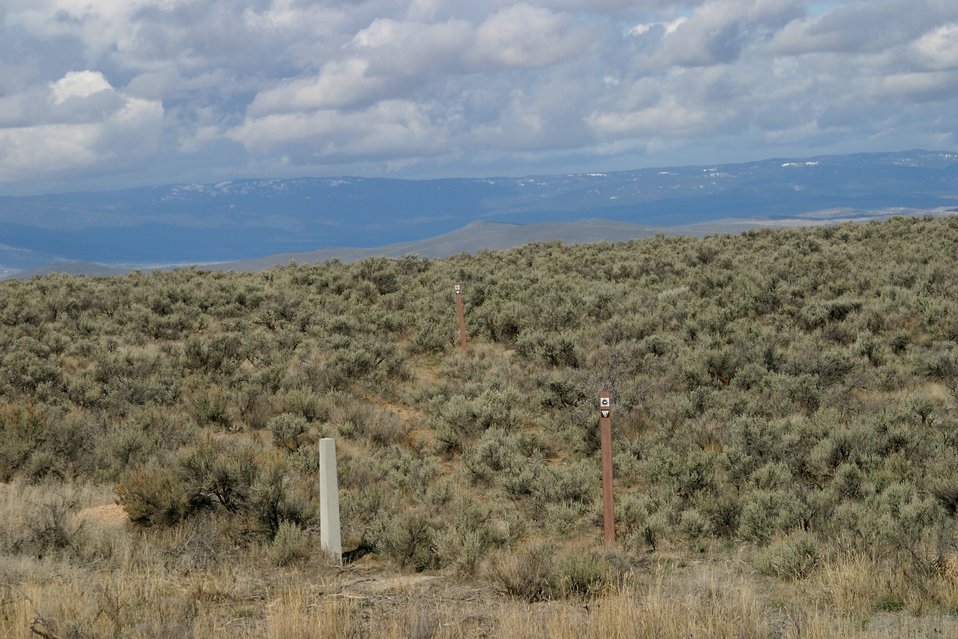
Oregon Trail ruts below the National Historic Oregon Trail Interpretive Center.